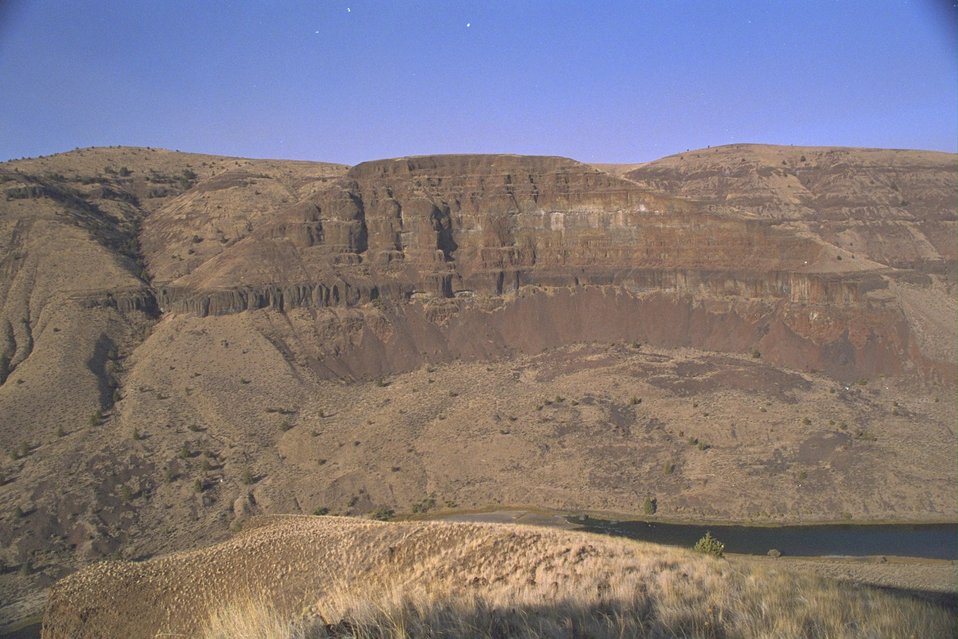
Basalt cliff face above John Day River.